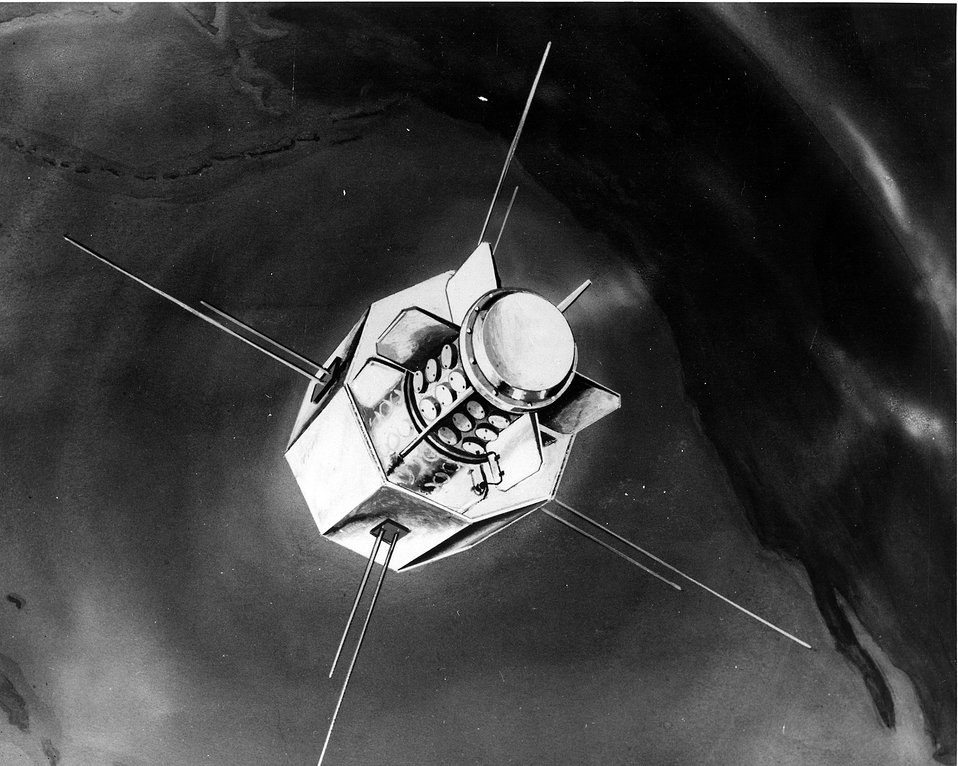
Artist's concept of an atomic battery to provide power for an operational navigation satellite.